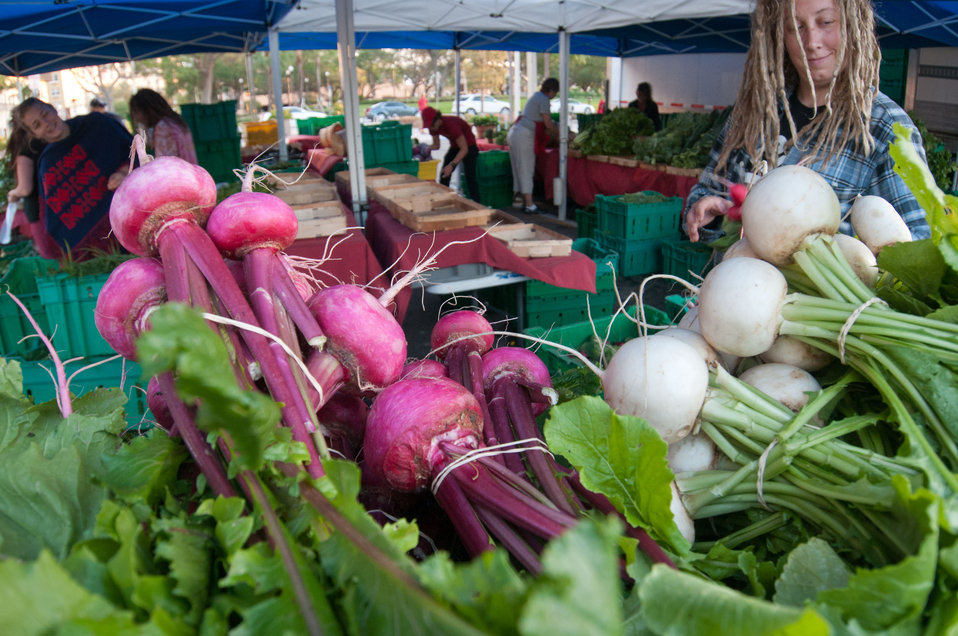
Worden Farm's (www.wordenfarm.com) Christina Pucci keeps the radish table piled high with fresh picked organic radishes, at the Saturday Morning Market, in St. Petersburg, FL on April 14, 2012. Worden Farm is a family farm that provides certified organic produce to Southwest Florida through community supported agriculture (CSA) membership programs and retail sale at several farmer’s (community) markets. Chris Worden, Ph.D. and Eva Worden, Ph.D. founded and operates the farm that employs more than 20 people. Growing certified organic crops in the coastal sandy soil has required them to develop innovative farming techniques. These techniques help the farm as well as help the studies of universities and farm industry. There are several Worden Farm apprenticeships that provide hands-on training in all aspects of the farm, to include direct marketing at the Saturday Morning Market, or other market sites. The farm also holds culinary and gardening workshops, and other interactive educational events. One of their organic certifications is from the U.S. Department of Agriculture (USDA) and they have partnered with the USDA Natural Resources Conservation Service (NRCS) for soil conserving windbreaks and long tunnel structures to nurture seedlings and extend the growing season.